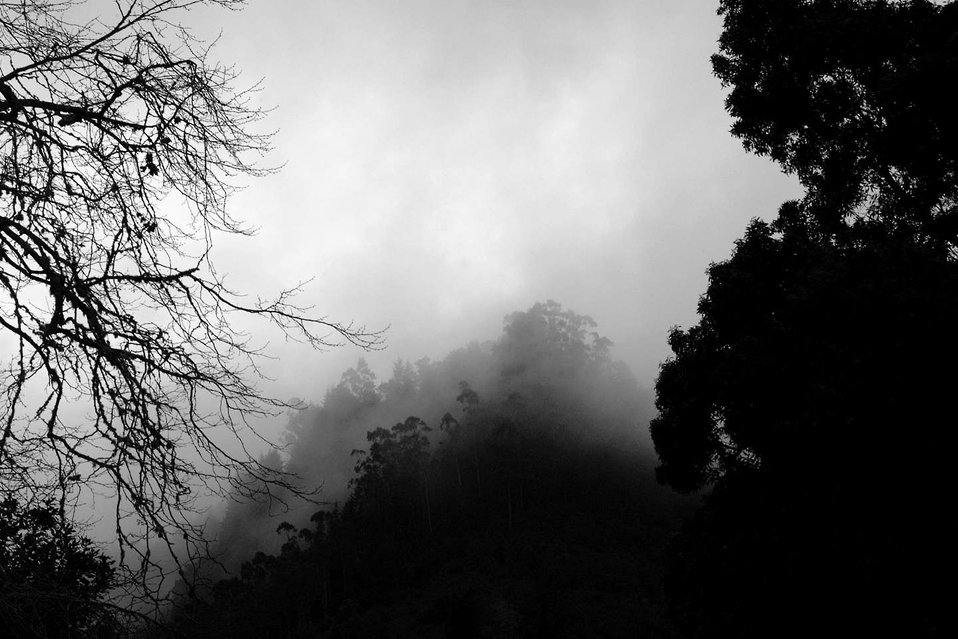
Uploaded by request of Filipa Freitas

Taken in Ribeiro Frio in Madeira's Island - Portugal

This picture represents one of the most beautiful natural places in Madeira Island called Ribeiro Frio.
The picture is in black and white to best represent the contrast between the mountains and the fog that represents this area. The Nature is around you, and you almost forget that you left the car a few meters away